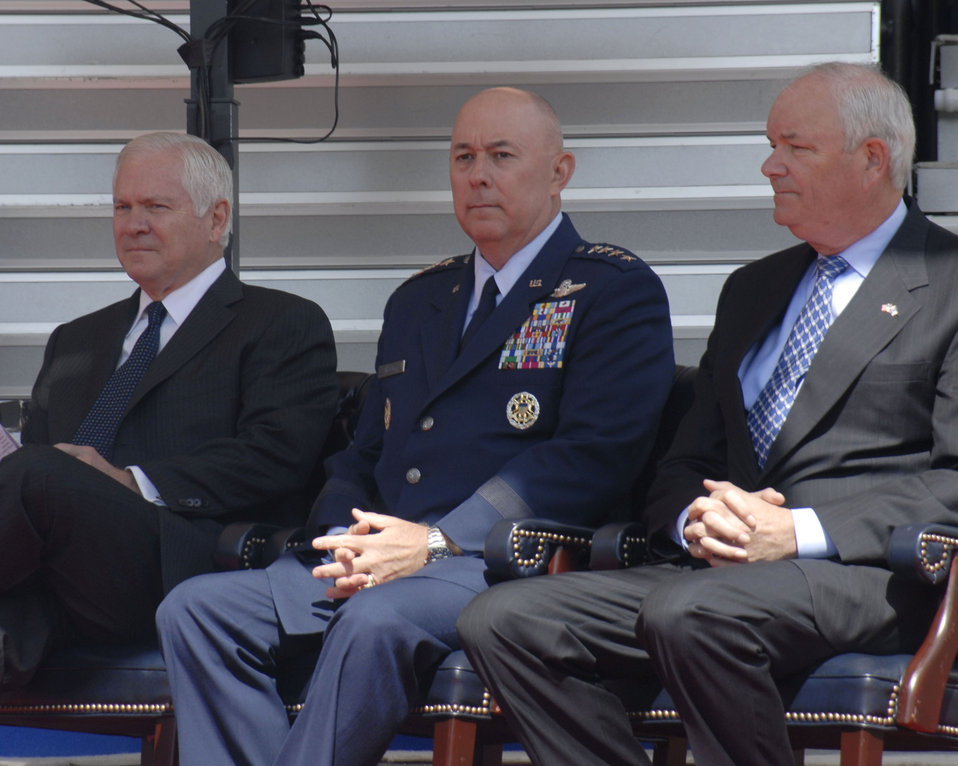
Air Force celebrates 60th anniversary

Secretary of Defense Robert Gates, Air Force Chief of Staff General T. Michael Mosely and Secretary of the Air Force Michael W. Wynne observe events from the stage at the Air Force 60th anniversary celebration in the Pentagon courtyard Sept. 18.